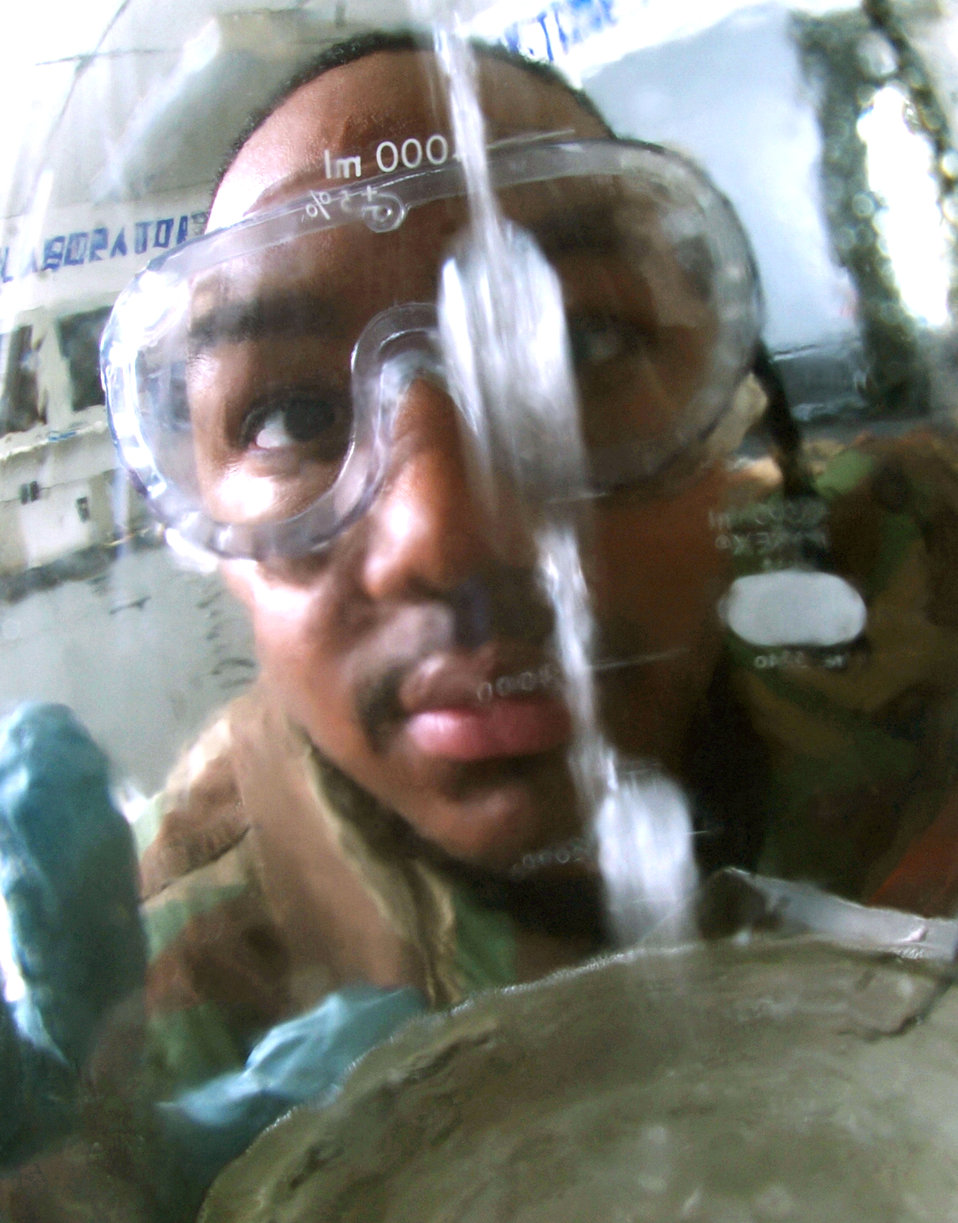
Technicians ensure safe, clean, serviceable fuel

YOKOTA AIR BASE, Japan -- Staff Sgt. Carmarius Johnson pours fuel inside a glass container during a test here. The aircraft sump sample test ensures that fuel from the bottom part of C-130 Hercules tank is free of particulates. Sergeant Carmarius is a fuels laboratory technician with the 374th Logistics Readiness Squadron here.